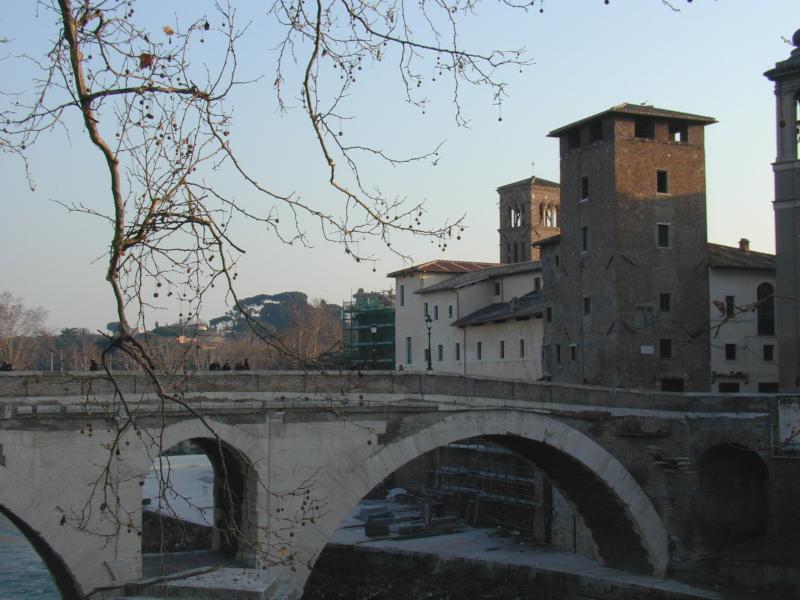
000205 12 ponte fabricio e torre pierleoni 1